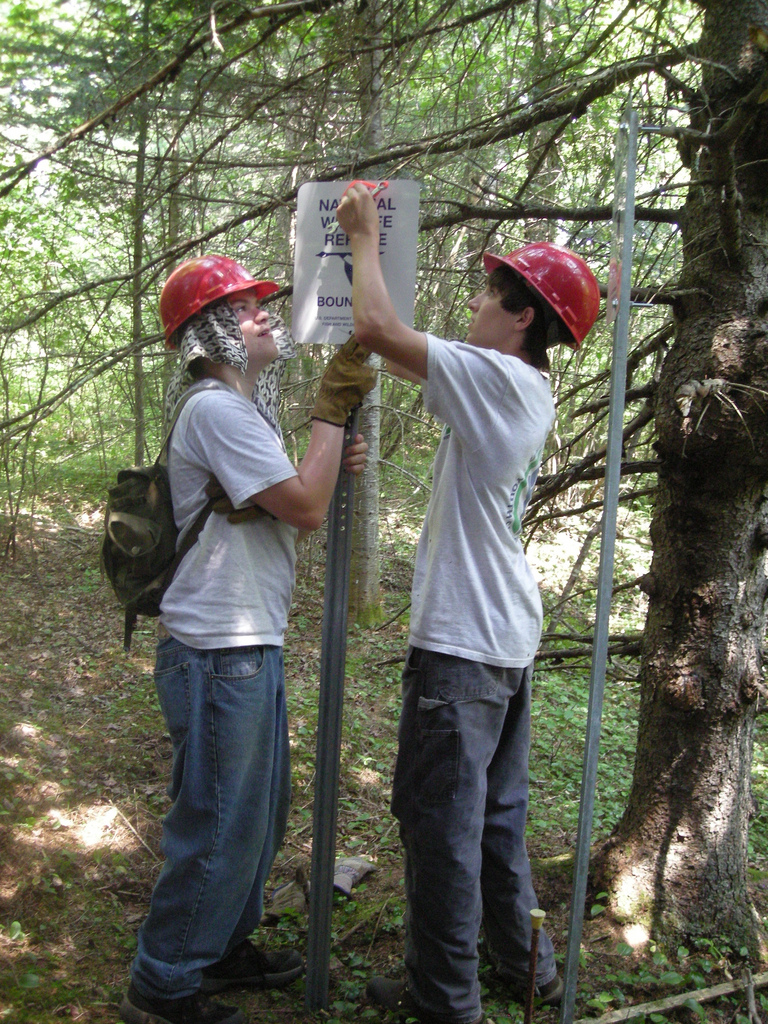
Boundary posting

U.S. Fish and Wildlife Service